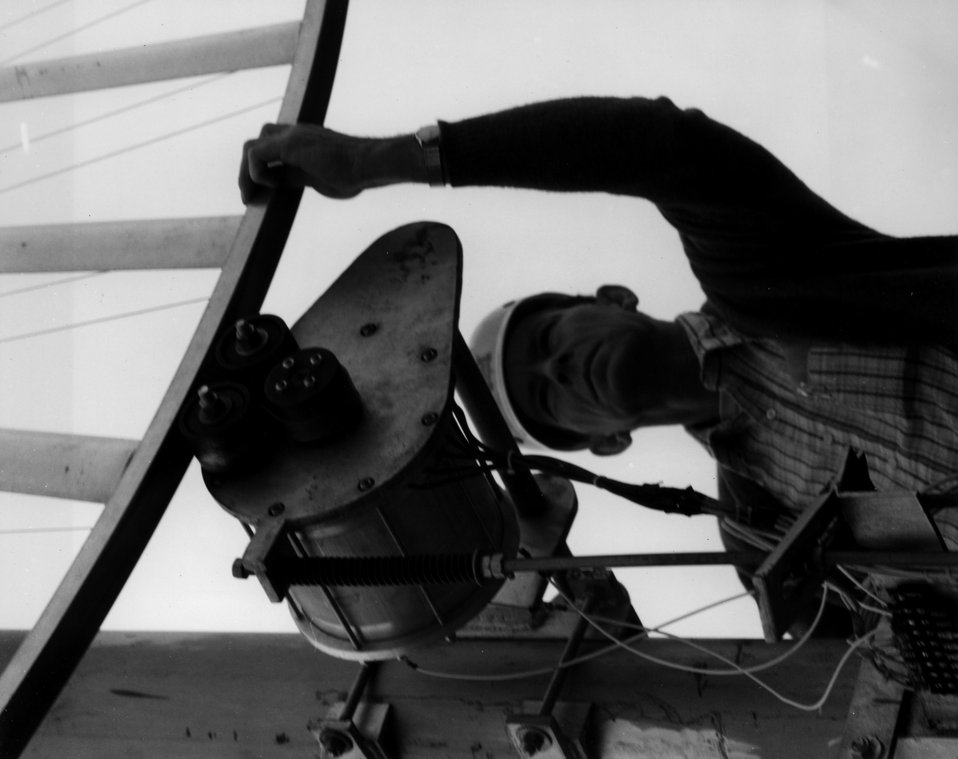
Scientists at Oklahoma State University, Stillwater, Oklahoma, are testing windmill resembling a bicycle wheel for the Energy Research and Development Administration. c. 1975